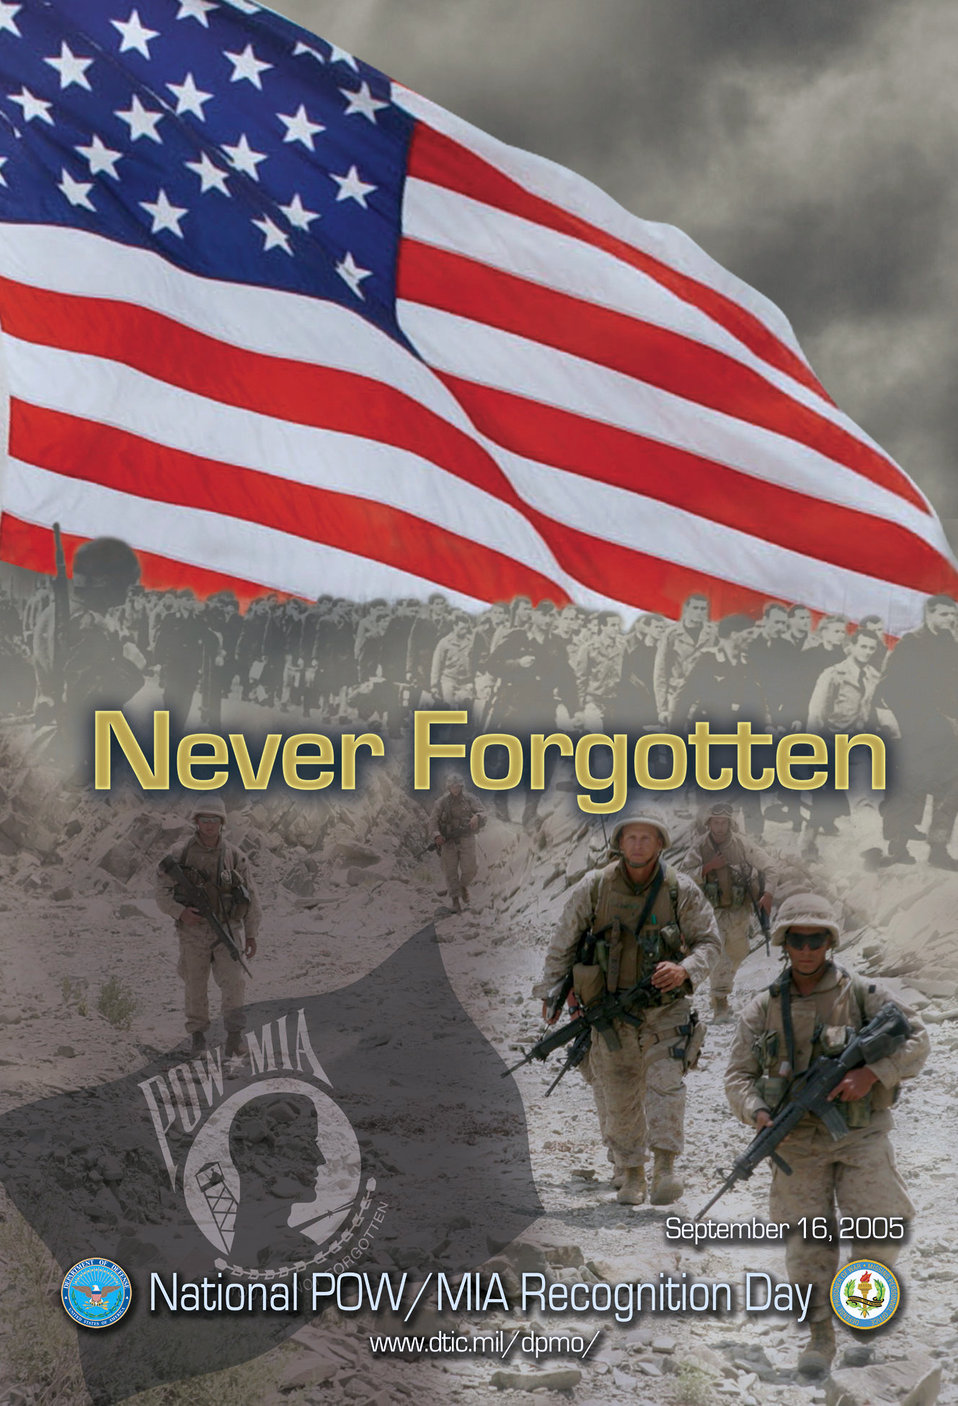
2005 POW/MIA Recognition Day poster unveiled

GRAPHIC -- About 140,000 copies of the 2005 POW/MIA Recognition Day poster are being sent to ships at sea, military installations worldwide, Veterans Affairs medical facilities and to veterans and family organizations.